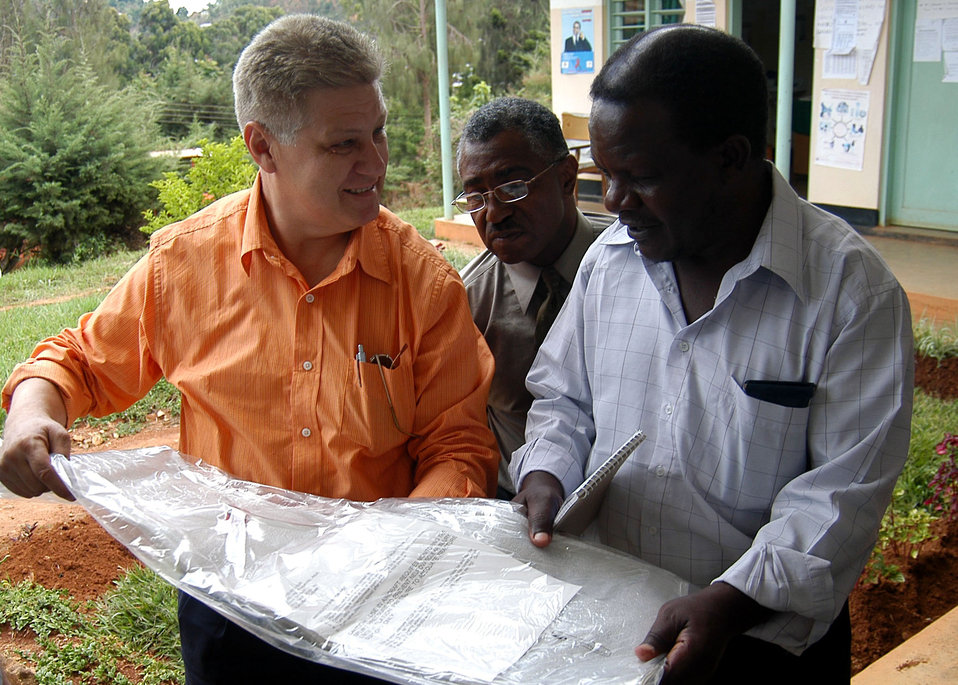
Ministry support team visits troops in Tanzania

Army Staff Sgt. Felix B. Crespo (left) shows a splint to Dr. Yateri Salimir (right) as Air Force Chaplain (Lt. Col.) Lawrence F. Keith listens to how the splint is used. Six medical kits were delivered to the Lushoto District Hospital by the civil affairs team Nov. 21. Sergeant Crespo, a Miami native, is the team sergeant for Civil Affairs Team 11 of C Company, 486th Civil Affairs Battalion. Chaplin Keith, a Blytheville, Ark., native, is the Combined Joint Task Force-Horn of Africa Religious Affairs deputy director. Salimir is a doctor for the hospital, which assists 13 clinics in the district.